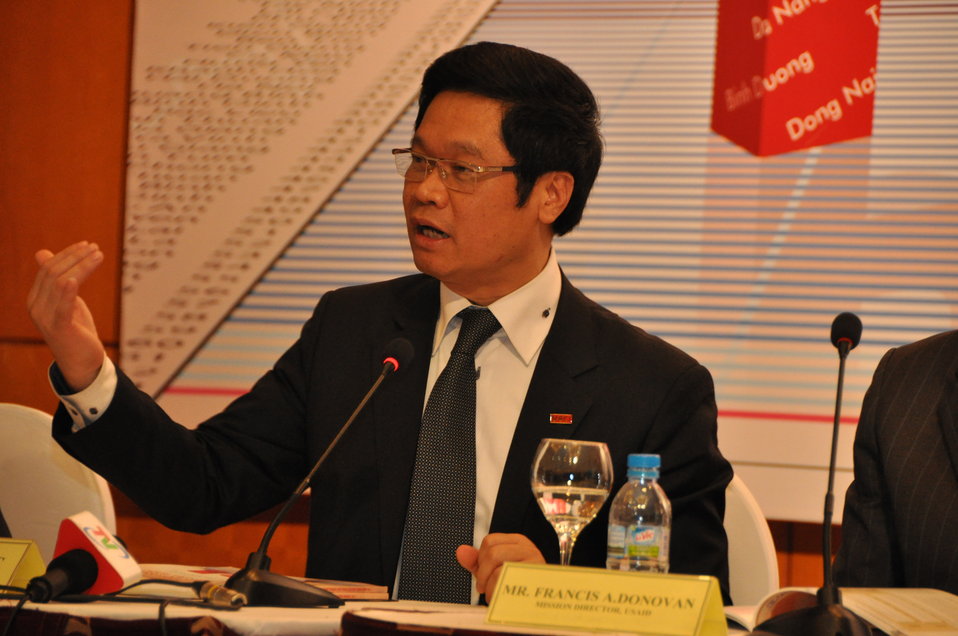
VCCI Chairman Vu Tien Loc at the Provincial Competitiveness Index 2011 Launch